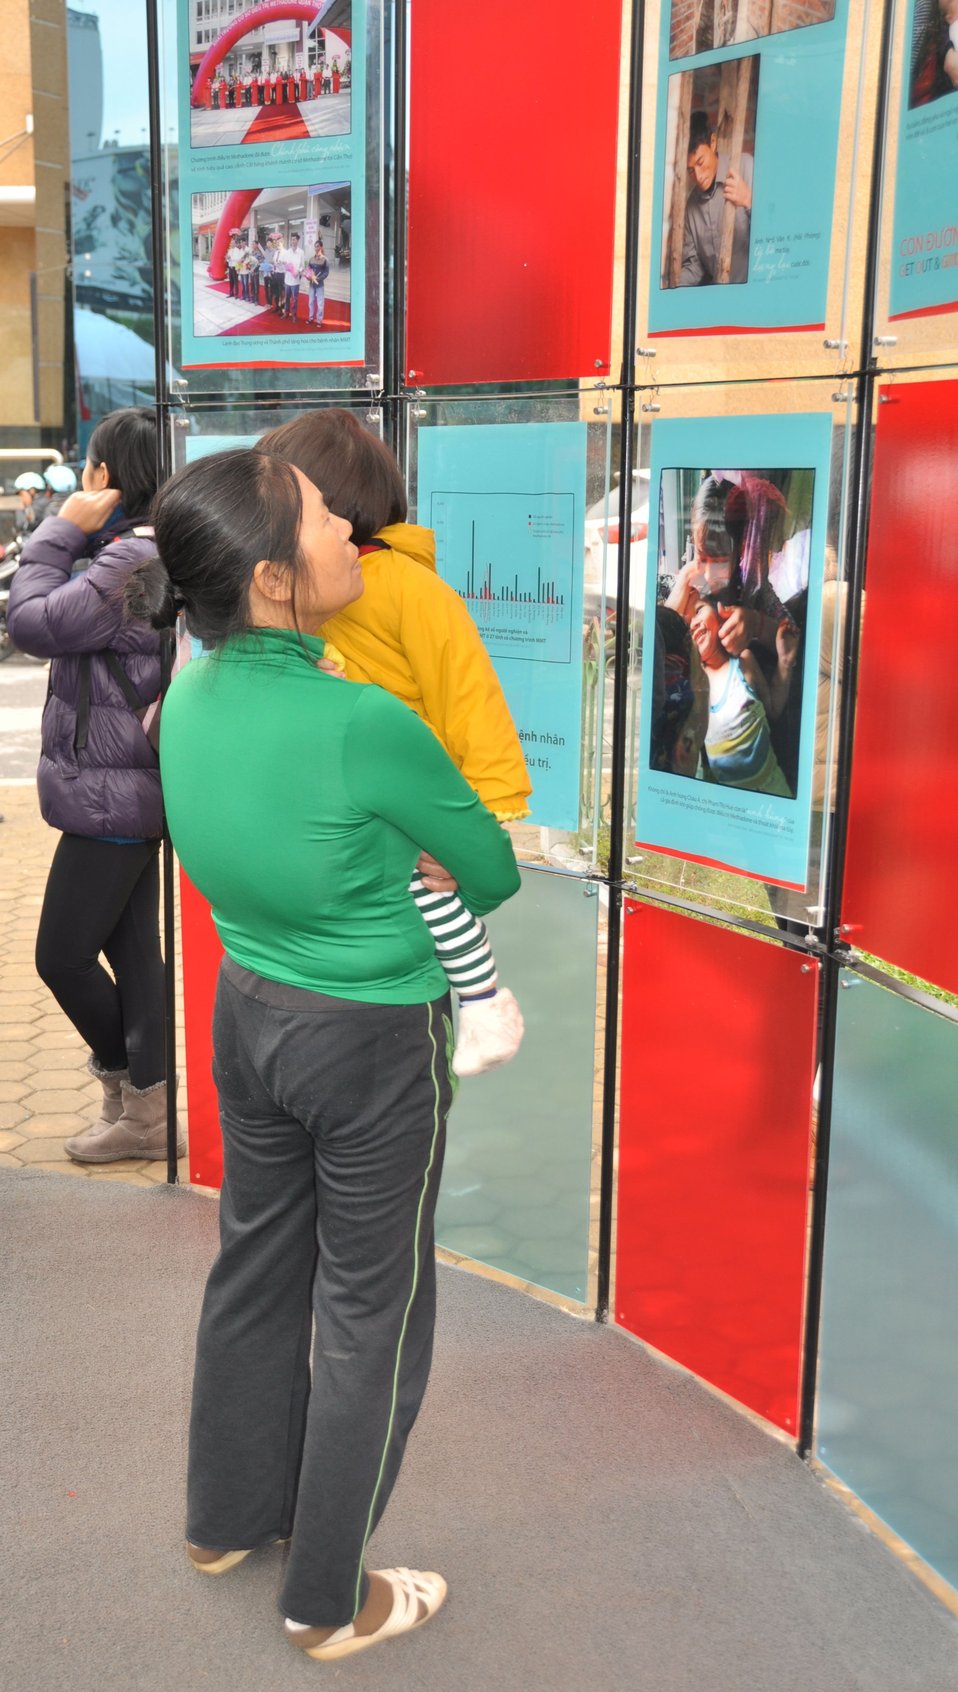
Photo Exhibition Launch

USAID/Vietnam